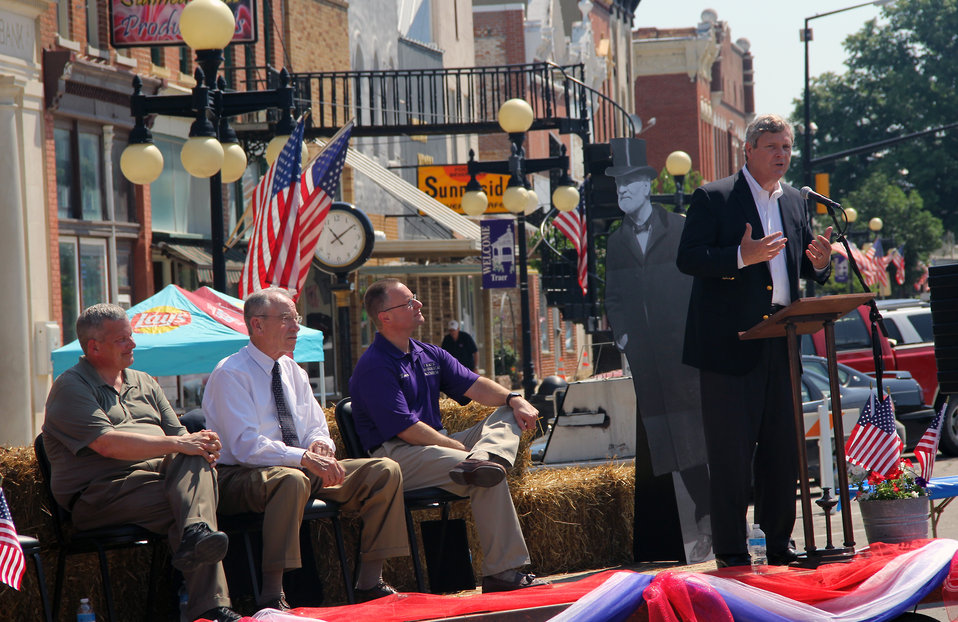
Agriculture Secretary Tom Vilsack makes remarks at the opening ceremony for the Traer Historical Museum exhibit honoring the longest serving cabinet member, former U.S. Agriculture Secretary James 'Tama Jim' Wilson. Wilson was Agriculture Secretary from 1897-1913 under Presidents McKinley, Roosevelt and Taft, at Traer Historical Museum, Traer, Iowa Traer, IA, on Saturday, Jul. 20, 2013.